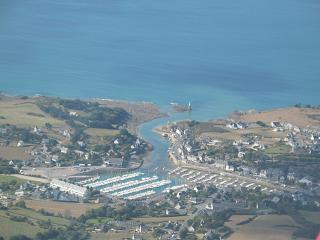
Photo aérienne de Dahouët prise le 24 septembre 2005